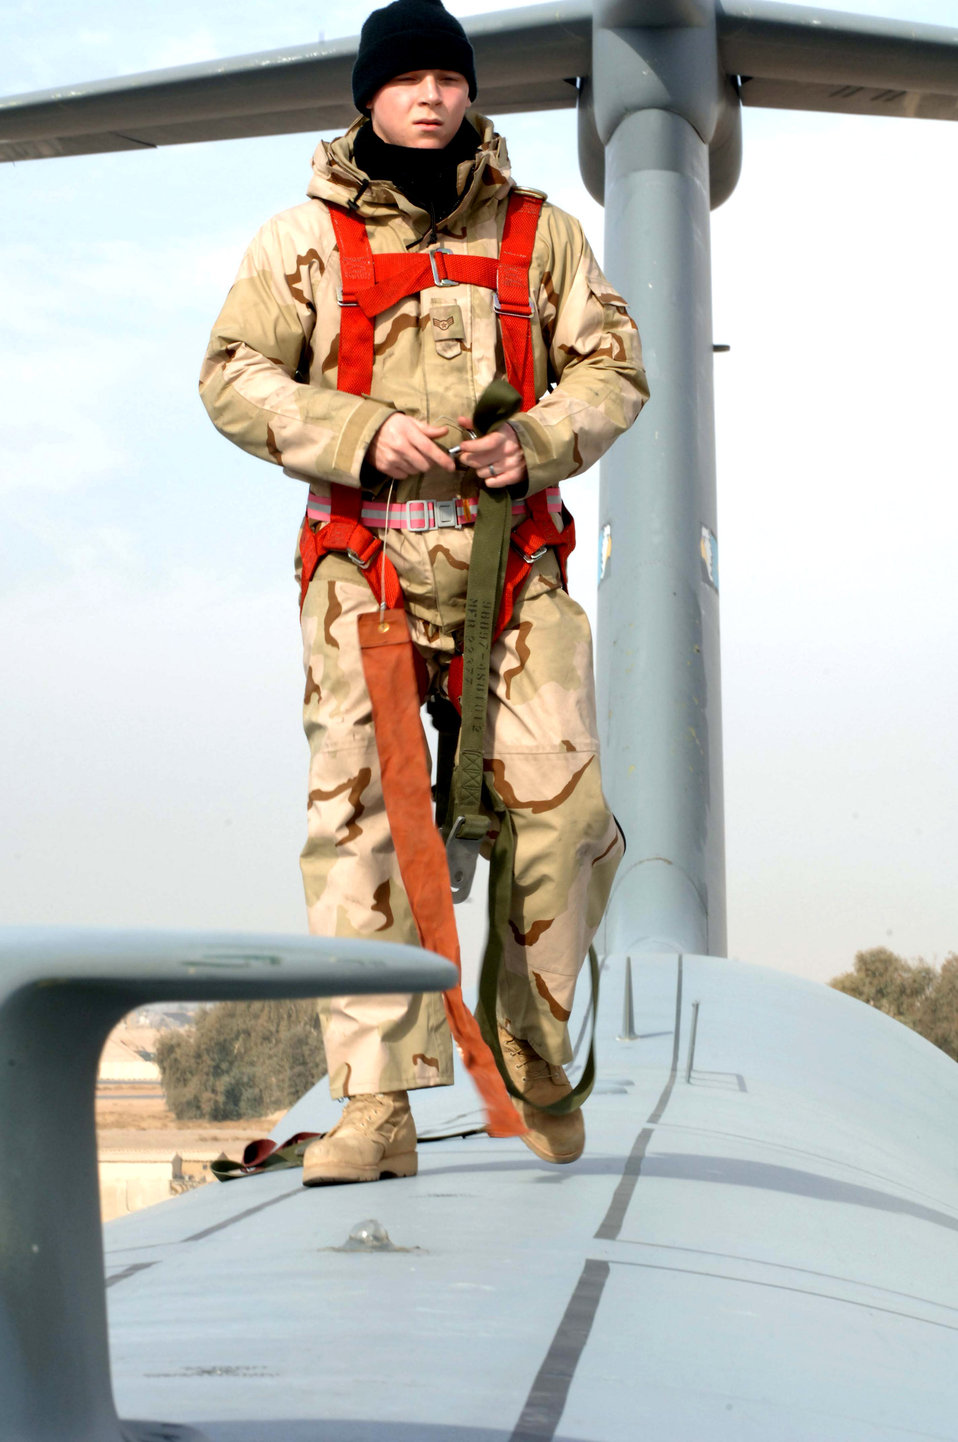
It's a long way down

Airman 1st Class Chris Olmstead walks to the next safety anchor on top of a C-5 Galaxy at Balad Air Base, Iraq. Airman Olmstead, a 721st Air Mobility Operations Group crew chief, is using a safety harness as a precautionary measure while he performs maintenance on the C-5.